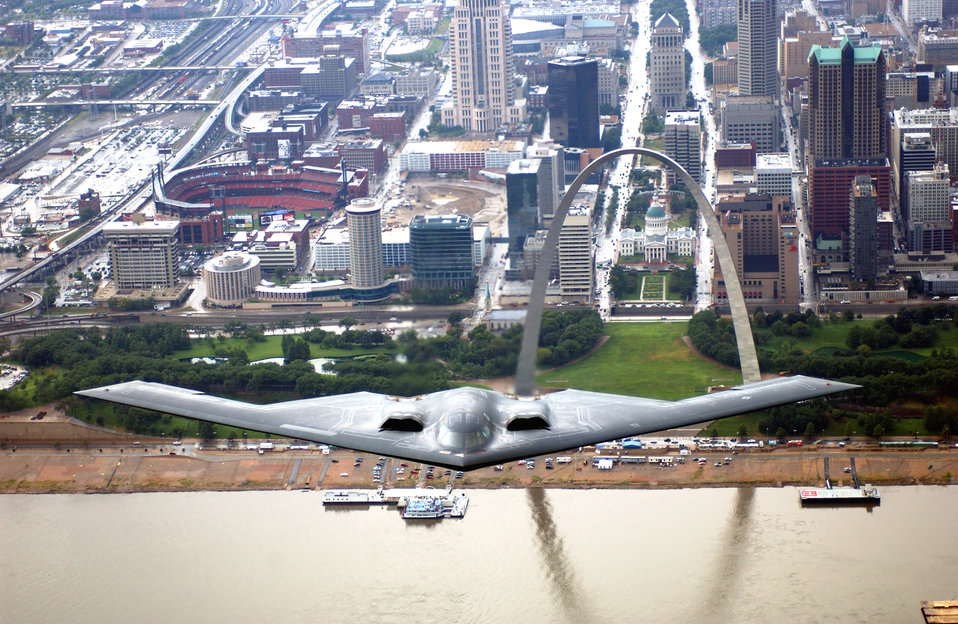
B-2 Spirit flies over St. Louis

A B-2 Stealth bomber from the 509th Bomb Wing at Whiteman Air Force Base, Mo., flies over the St. Louis Arch on Aug. 10. The B-2 flyover was one of several events celebrating Air Force Week in St. Louis.